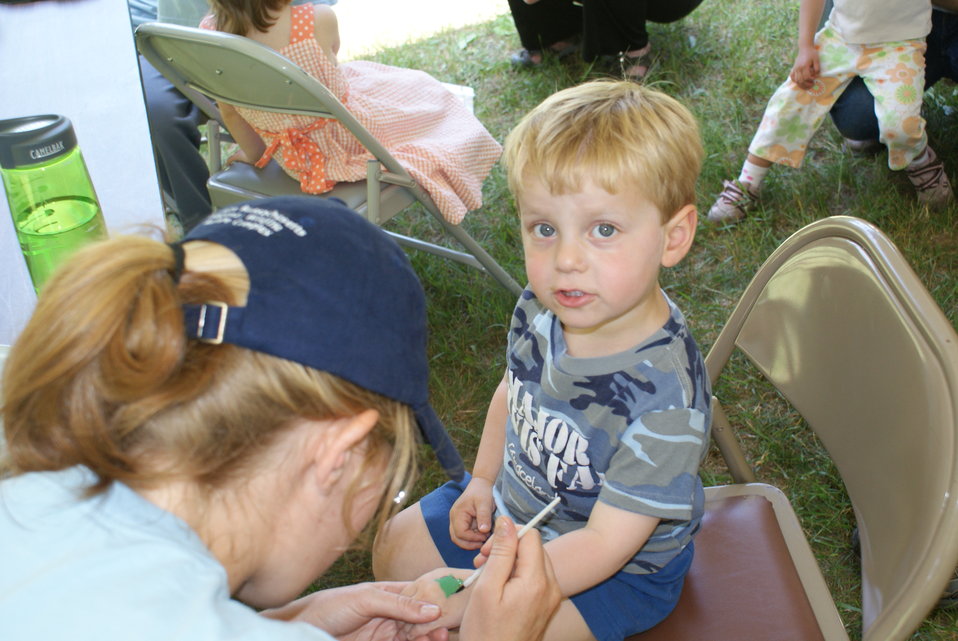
Great Meadows Fishing Day 2010

Great Meadows National Wildlife Refuge in Massachustts holds an annual fishing day where all anglers -- beginners and experienced -- join refuge staff and other experts for a day filled with fishy fun!

Visitors learn how to fly-cast, spin-cast, and even tie your own fly. All equipment and instruction is provided, and there are always games, crafts, music and face painting as well.